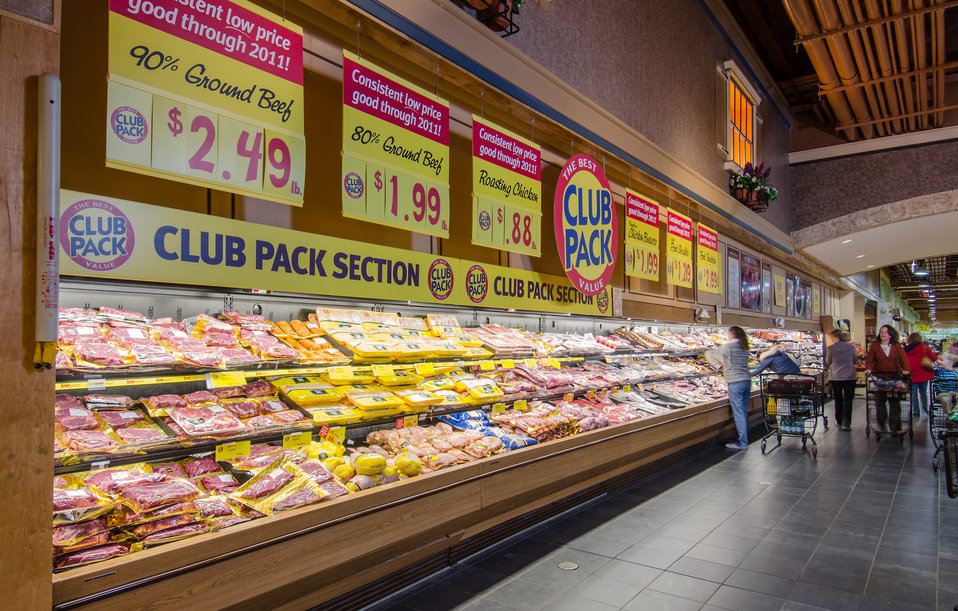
Shoppers at the meat and poultry department of a grocery store in Fairfax, Virginia, on March 3, 2011.